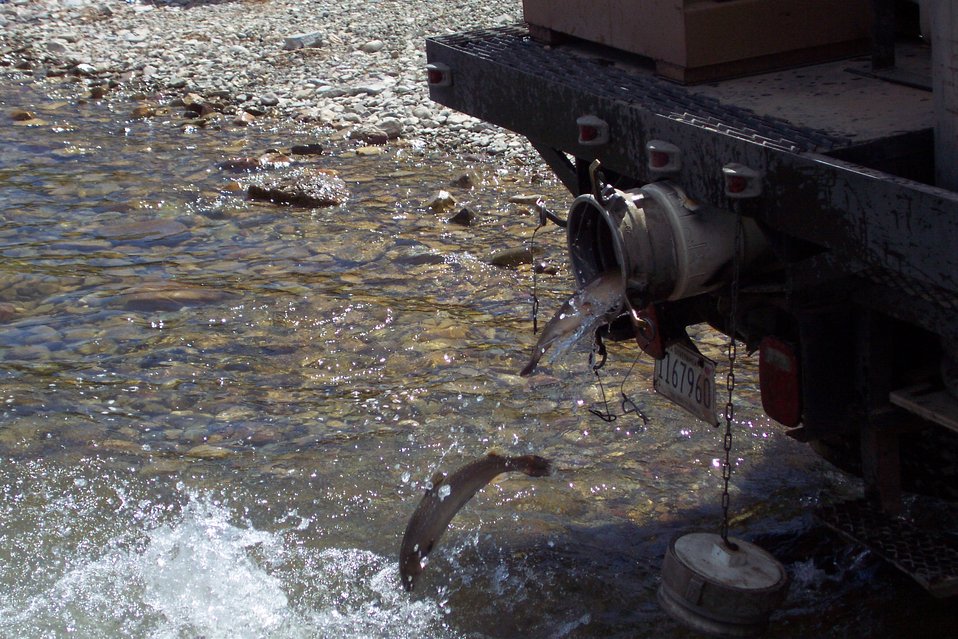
Creston National Fish Hatchery fish distribution in Duck Lake.